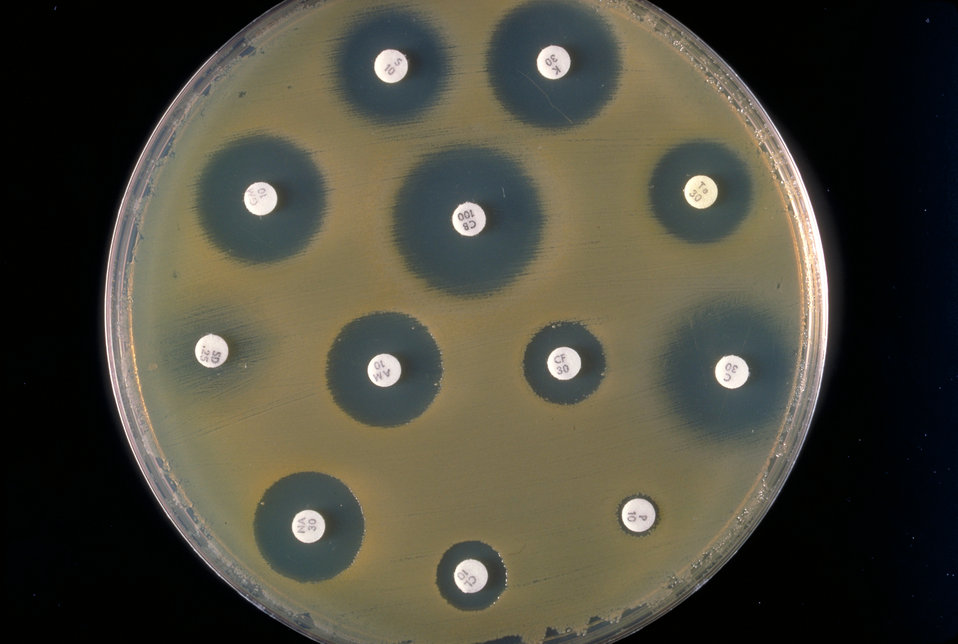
This is a plate culture of Enterobacter sakazakii performed during an antibiogram study.